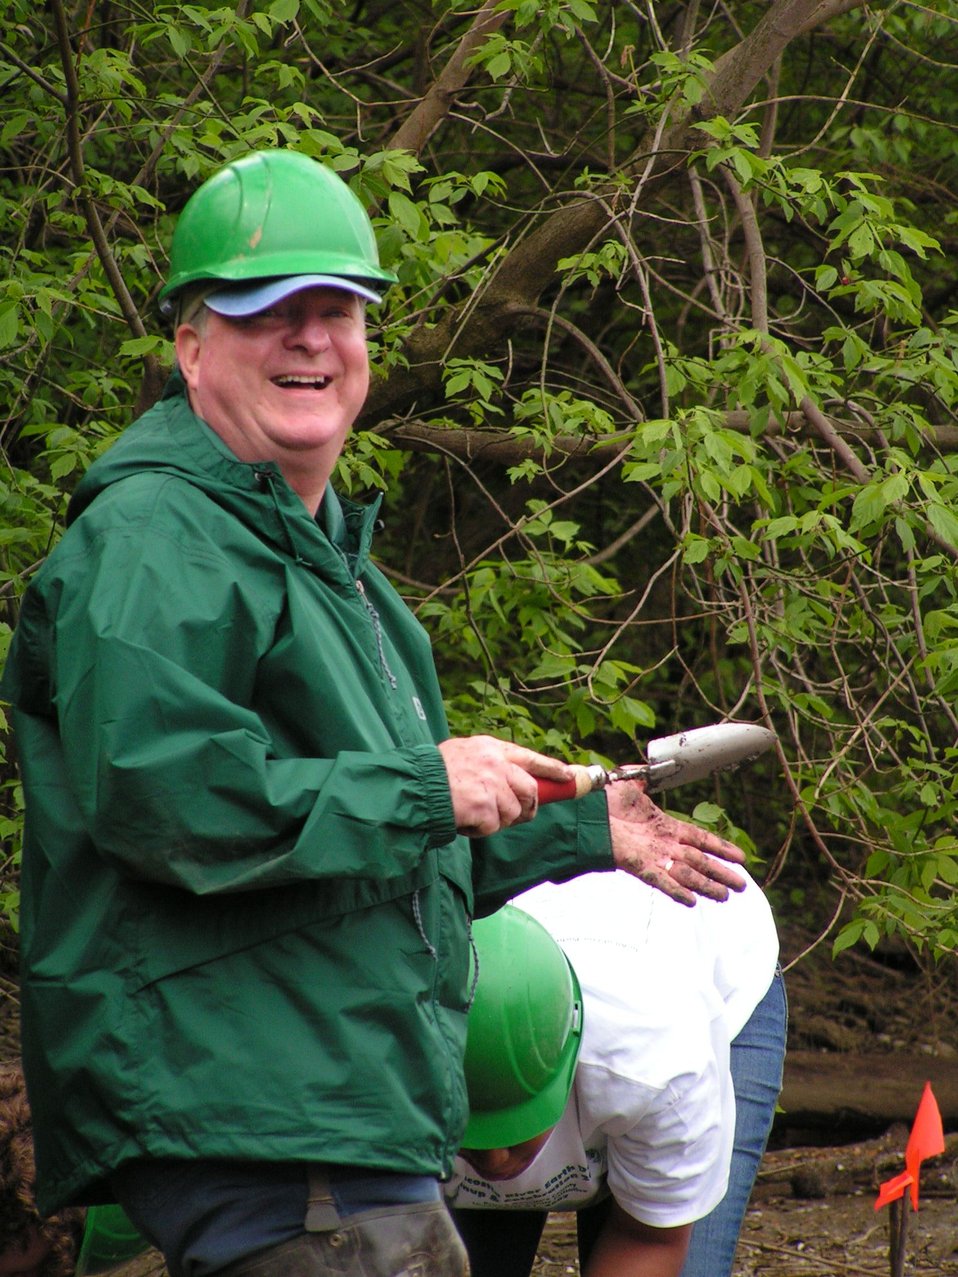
Uploaded by request of Tania Allen

Photo taken along the Anacostia River.

Planting aquatic plants along the Anacostia River for Earth Day 2007.